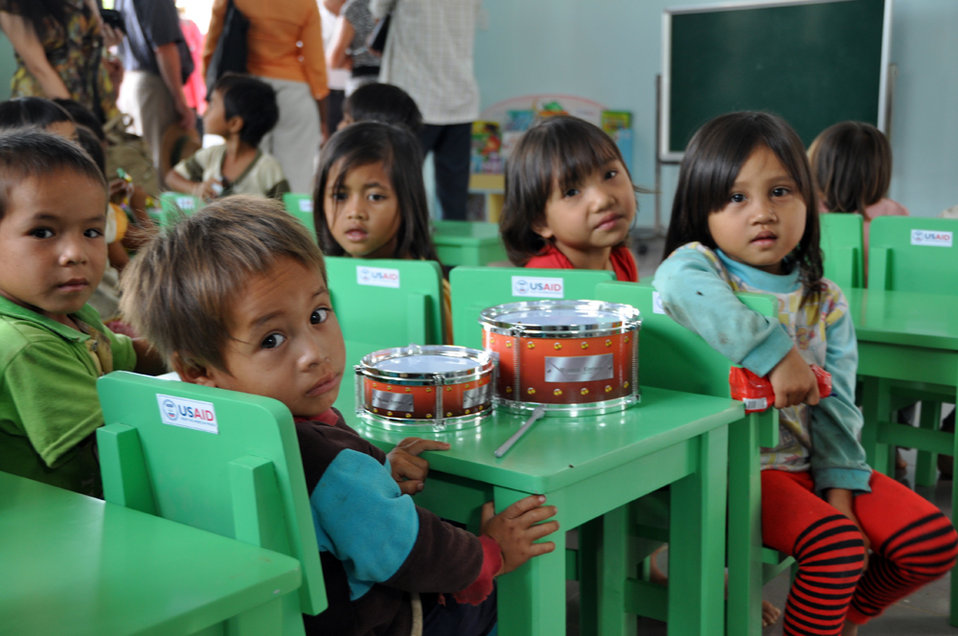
USAID contributes to refurbished pre-schools and teacher training in Vietnam